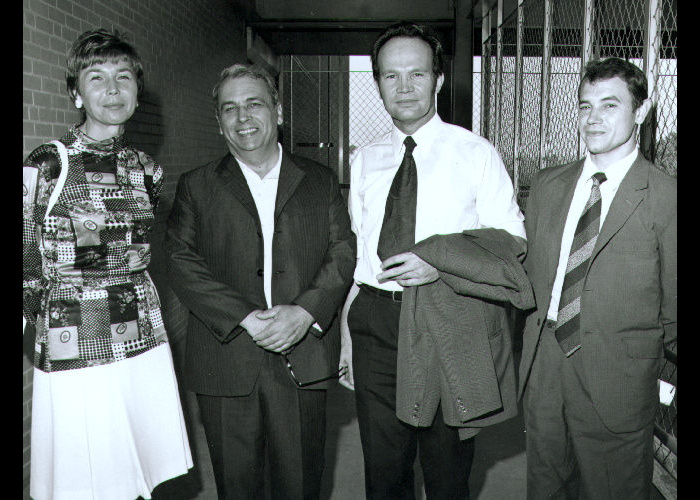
Russian Influenza Cooperative Team visits CDC in 1975.